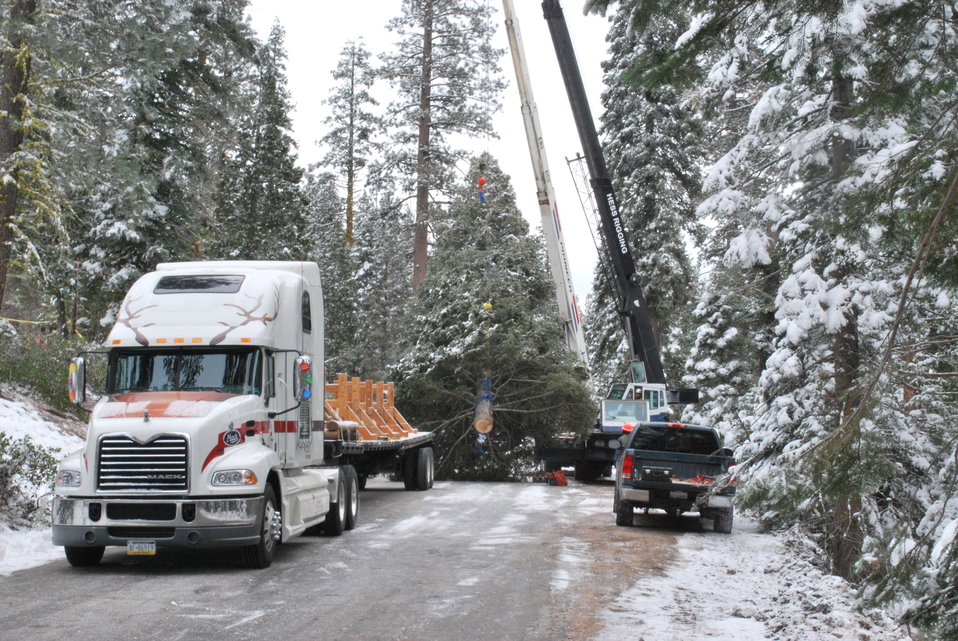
11-5-11 tree

The 65-foot white fir that will be this year's Capitol Christmas Tree is loaded onto its flatbed truck by two cranes after being harvested Nov. 5. Prior to its harvesting on the Stanislaus National Forest in California, an elder from the Tuolumne Band of Me-wuk Indians blessed the majestic tree and its journey in a private ceremony.